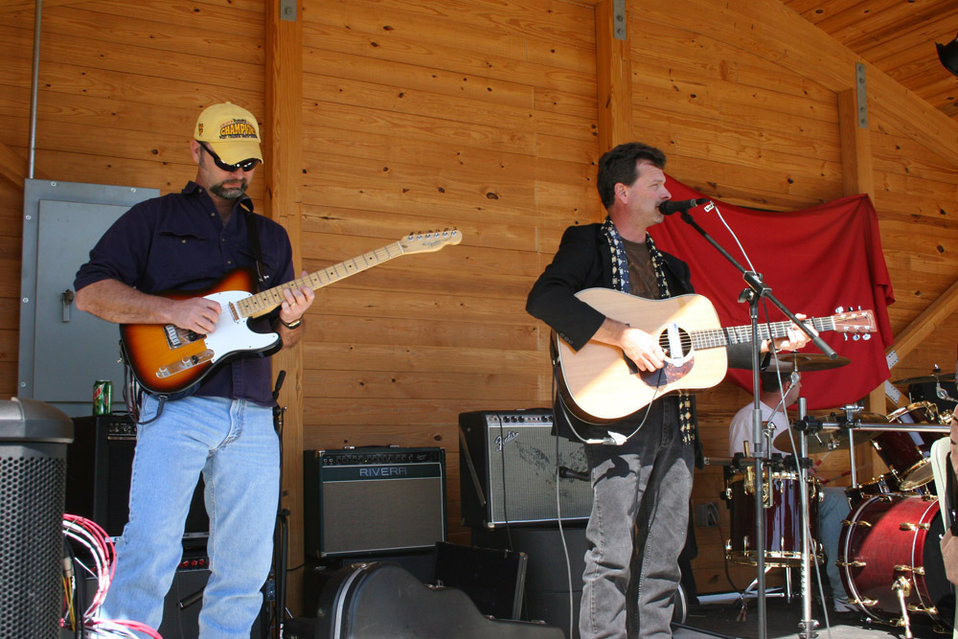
Freshwater Folk Festival

The 5th Annual Freshwater Folk Festival at White Sulphur Springs National Fish Hatchery in West Virginia.Credit: USFWS